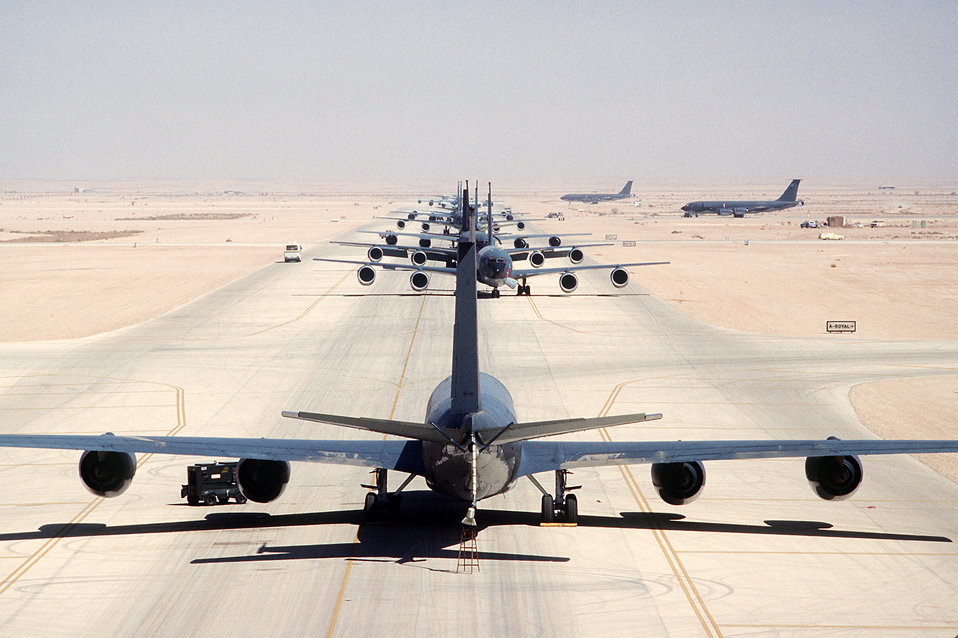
KC-135R Stratotanker

1990's -- Several KC-135R Stratotanker aircraft sit parked along the flight line during Operation Desert Shield.